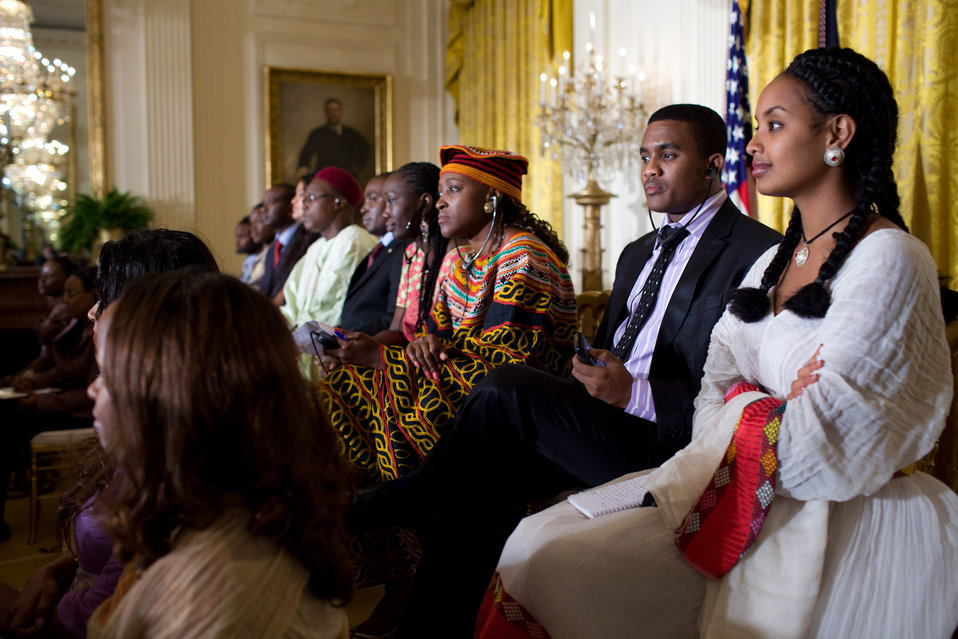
President Obama Hosts a Town Hall in the East Room of the White House

President Barack Obama hosts a Town Hall in the East Room of the White House as part of his Forum with Young African Leaders in Washington, D.C., on August 3, 2010.